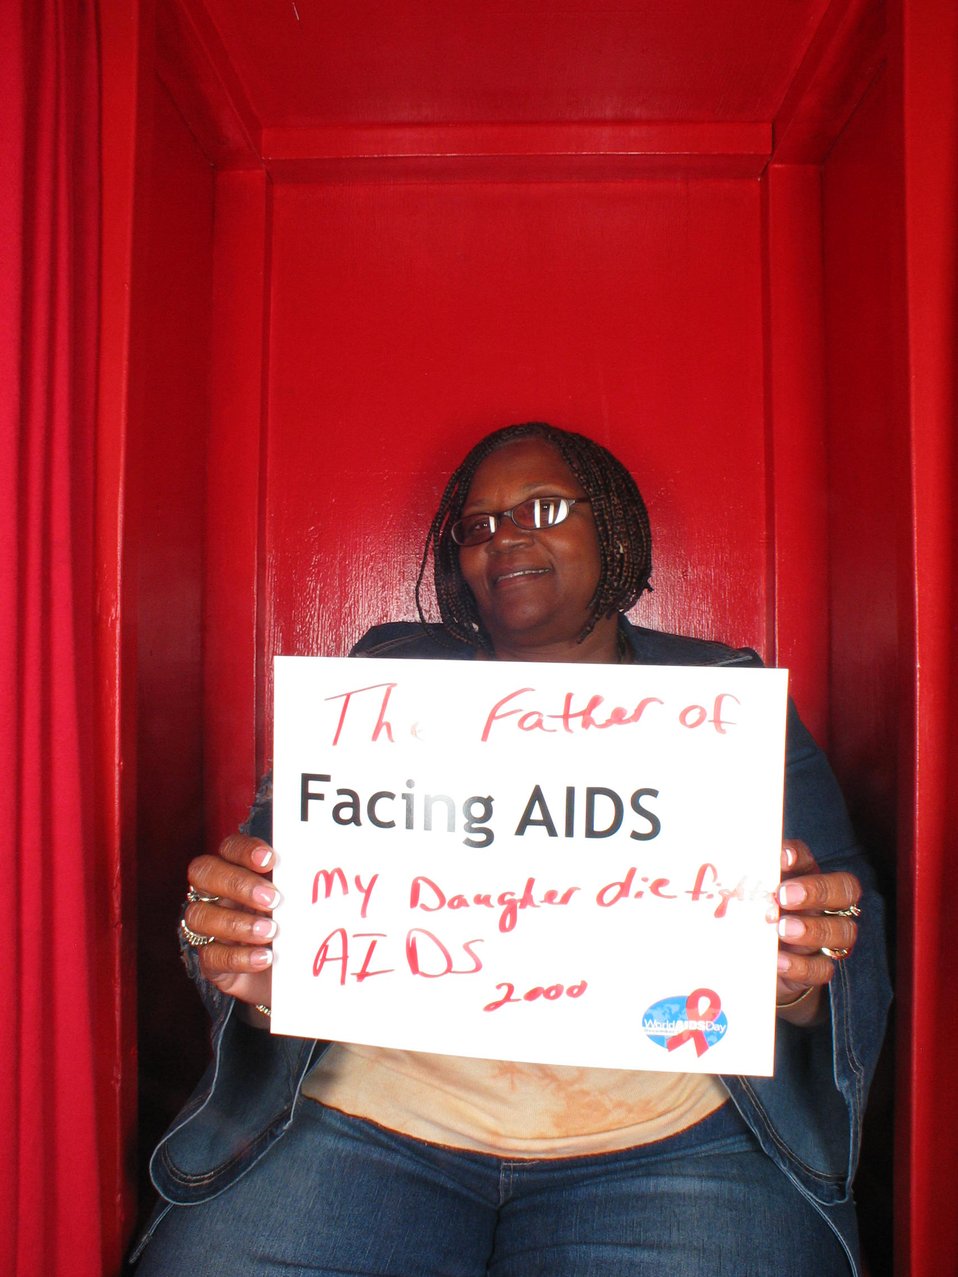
Facing AIDS The father of my daughter died of AIDS.